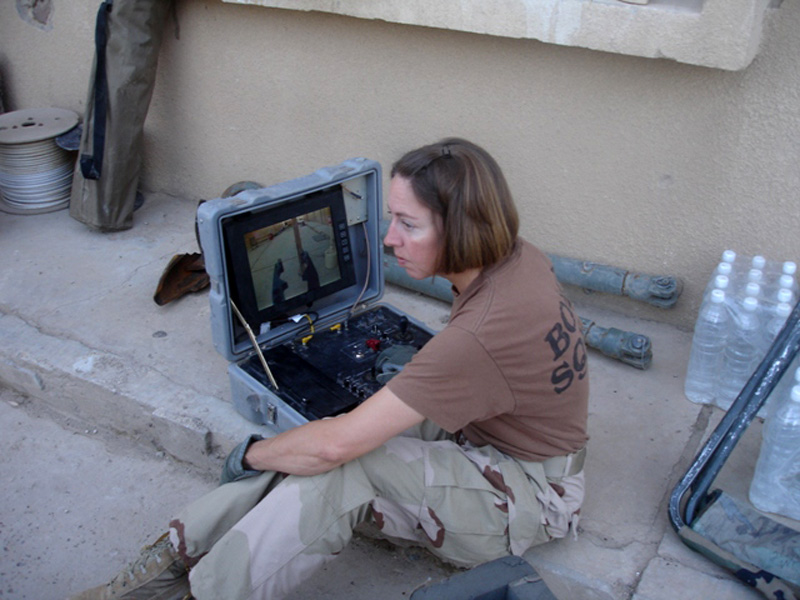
EOD specialist chosen to attend State of the Union address

Tech. Sgt. Michelle Barefield, an explosive ordnance disposal specialist shown here conducting an operations check for a remote-controlled robot, was invited to attend the State of the Union address Jan. 23 as a guest of the president. She was one of five military members, one from each service, to attend. Sergeant Barefield is currently deployed to Iraq from Seymour Johnson Air Force Base, N.C.